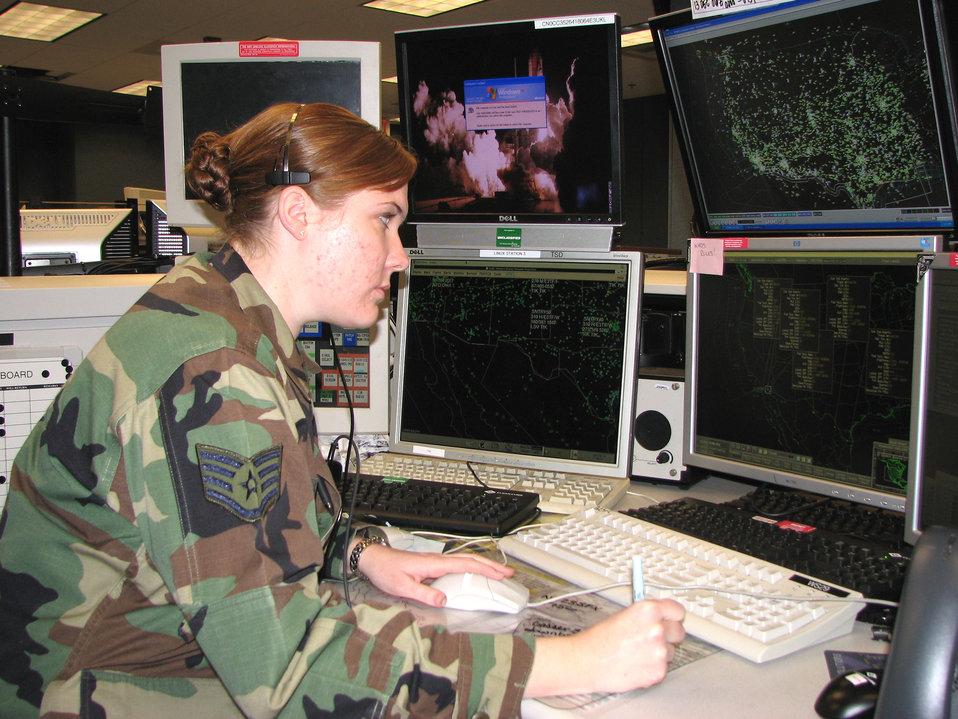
Serving through the season: Staff Sgt. Lara Koler

Staff Sgt. Lara Koler tracks radar targets at the Western Air Defense Sector at McChord Air Force Base, Wash. A native of Eugene, Ore., Sergeant Koler is an identification technician who will spend this holiday season identifying